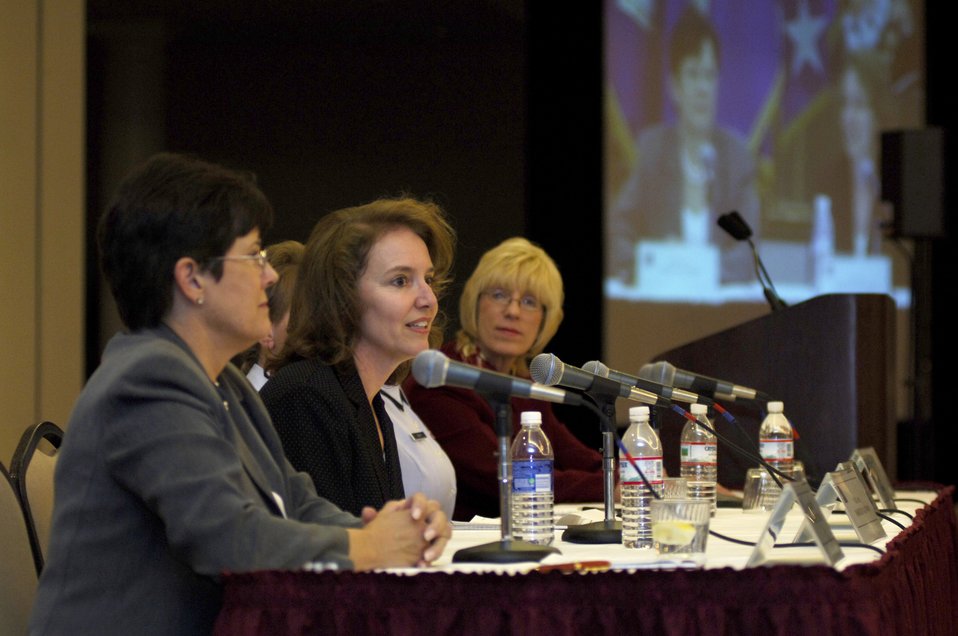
Captial Shield 2008

Retired Maj. Gen. Teresa Marne Peterson, Retired Col. Marcelyn Atwood, Senior Master Sgt. Joan Young and Tech. Sgt. Kathy Shaw and Mrs. Margaret Ringenberg answer questions relating to Air Force women from the 1990s to today for audience member during the 2007 Air Force Heritage to Horizon Women's Training Symposium on Oct. 31.